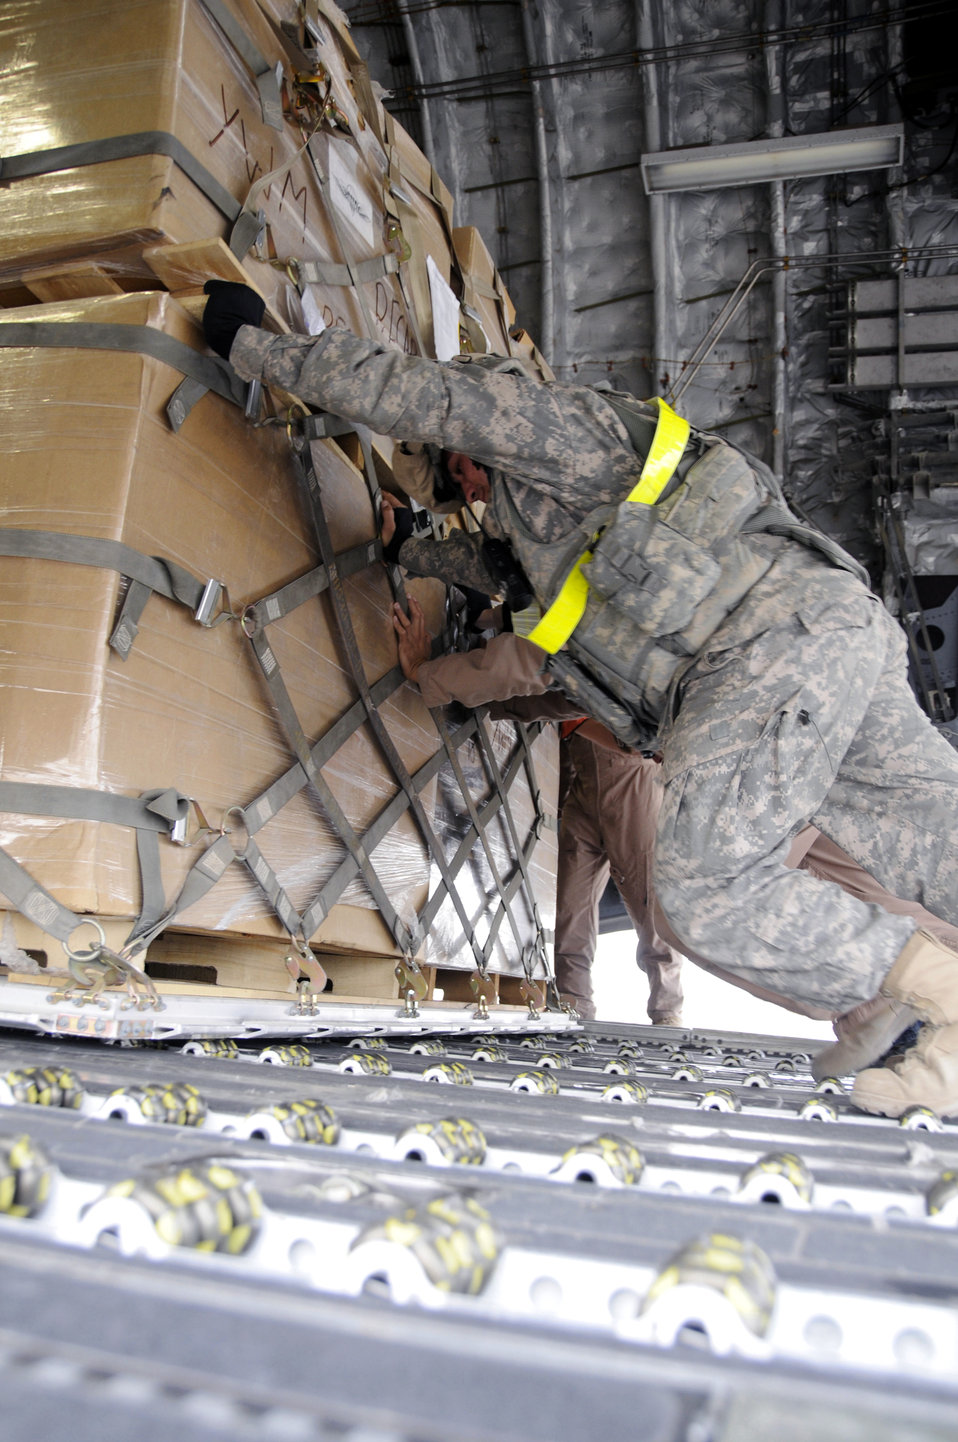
Airlift delivers for warfighters

Airmen unload cargo from the back of a C-17 Globemaster III Nov. 19 at Mosul Air Base, Iraq. The C-17 has been delivering cargo to and from different bases in the area of responsibility in support of Operation Iraqi Freedom.